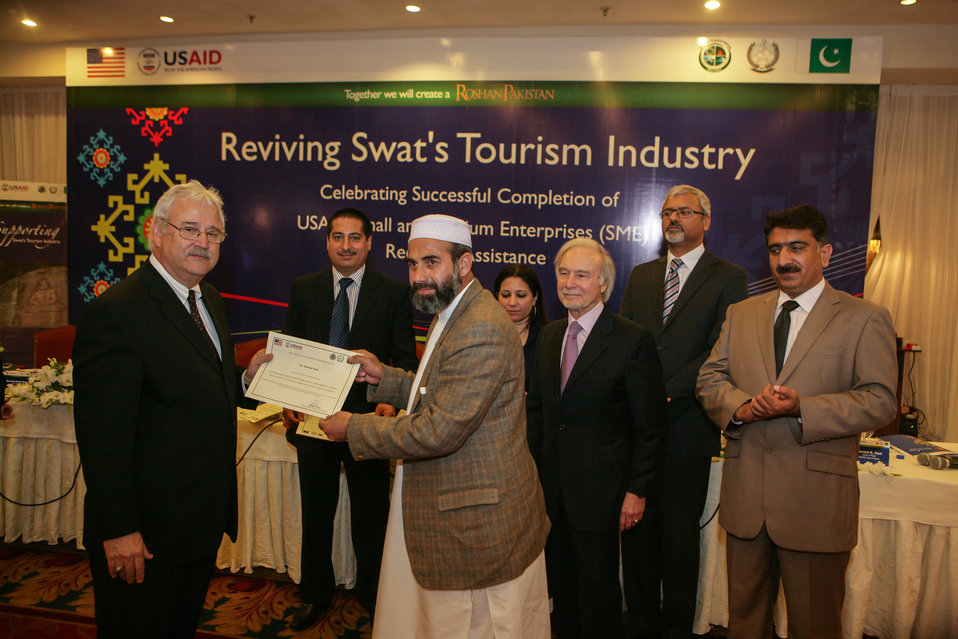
Graduation event of USAID Firms Project's Malakand Small and Medium Enterprises (SME) Recovery Assistance Program

Mr. Alan Davis, Director Economic Growth and Agriculture, distributed Certificate of Achievement among the business owners for successfully completing the grants program in hotel and fisheries sectors.